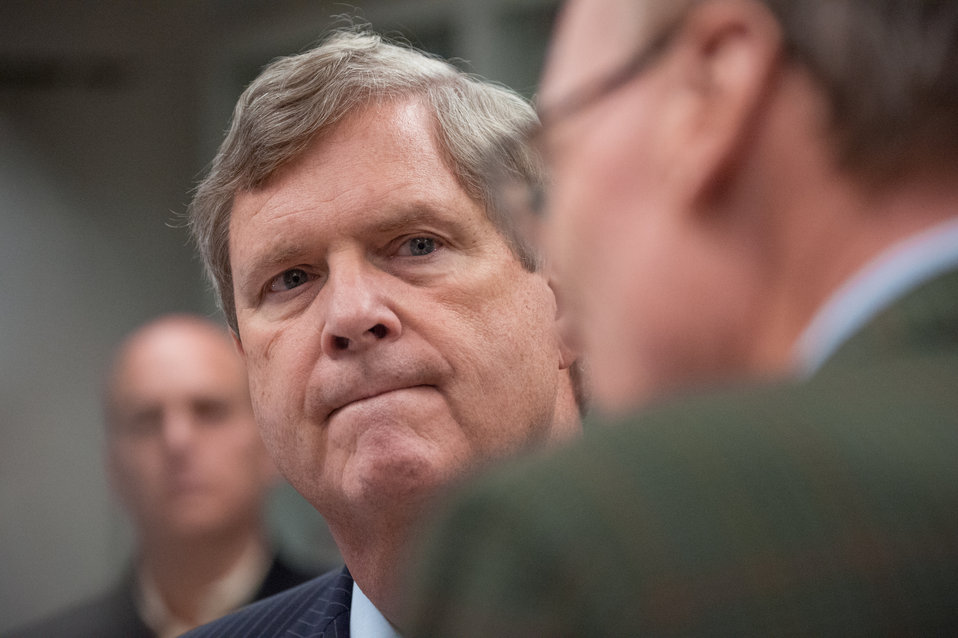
U.S. Department of Agriculture (USDA) Secretary Tom Vilsack listens to Agriculture Research Service (ARS), National Center for Genetic Resources Preservation (NCGRP), National Animal Germplasm Program (NAGP), Program Leader Dr. Harvey Blackburn talks about the original need and history of the NAGS embryo and sperm freezing and reconstitution technology; the productive cooperation and collaboration with industry, other agencies and international partners; and how the data from their work becomes part of (animal genetic resource information network (AnimalGRIN) an ever-growing source of information, during his visit in Ft. Collins, CO, on Wednesday, Nov. 6, 2013.